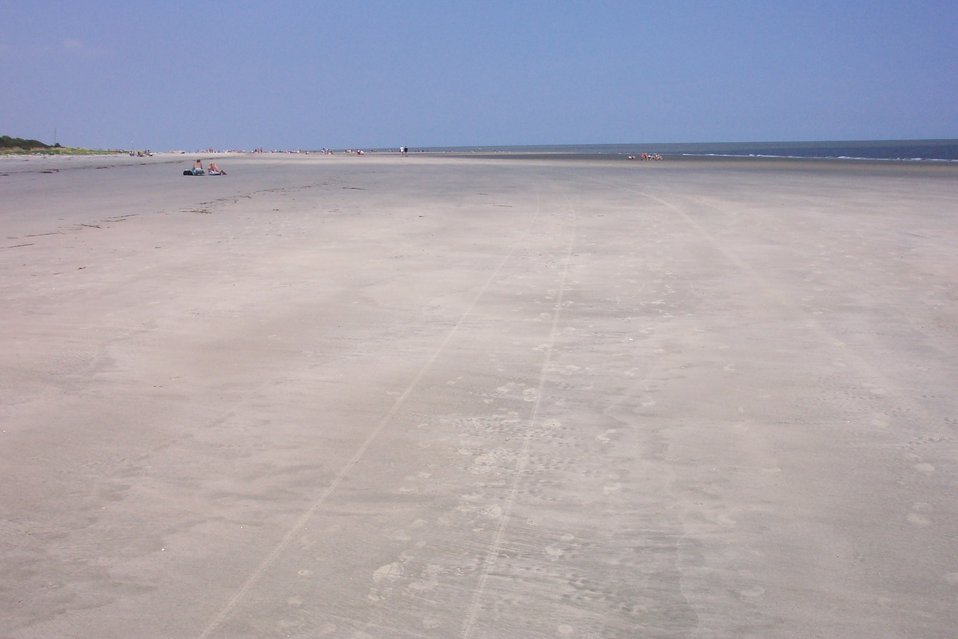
The beach on Sullivans Island near Fort Moultrie at low tide.